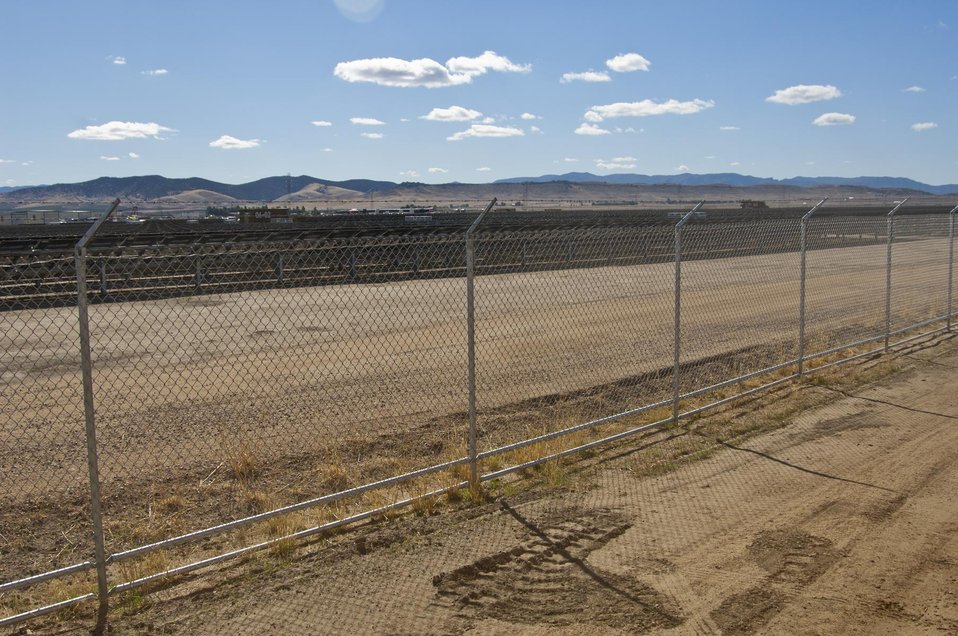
Kit Fox Fence at Topaz Solar